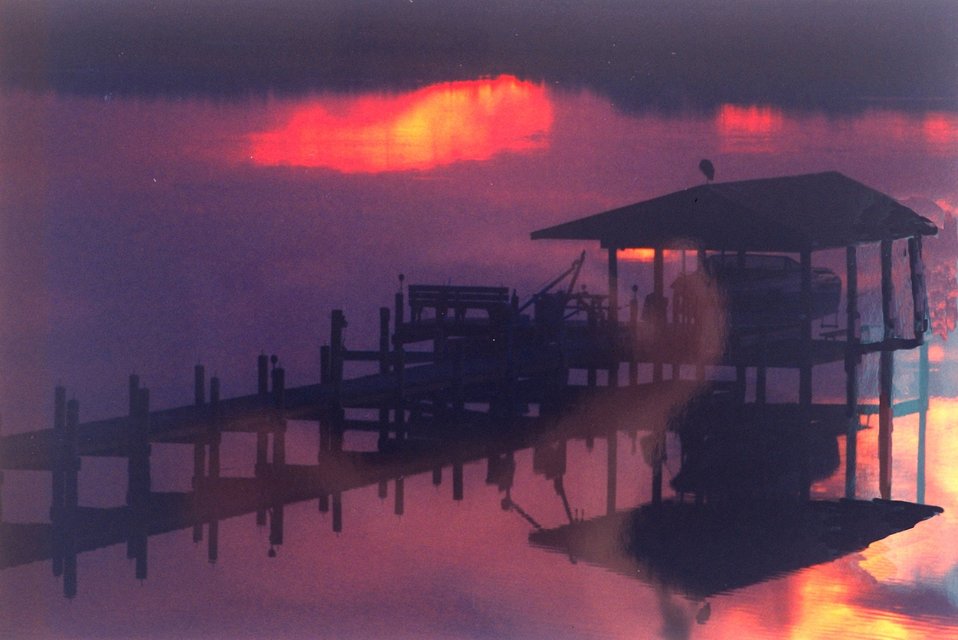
Patuxent River sunset with reflections on a calm river.